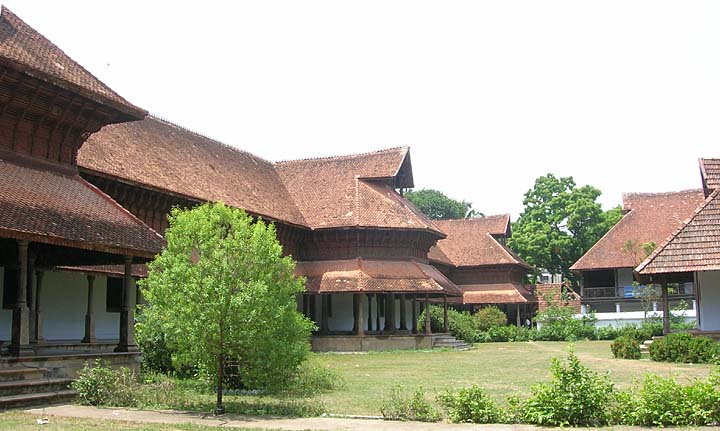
Kuthira Malika - view from the courtyard